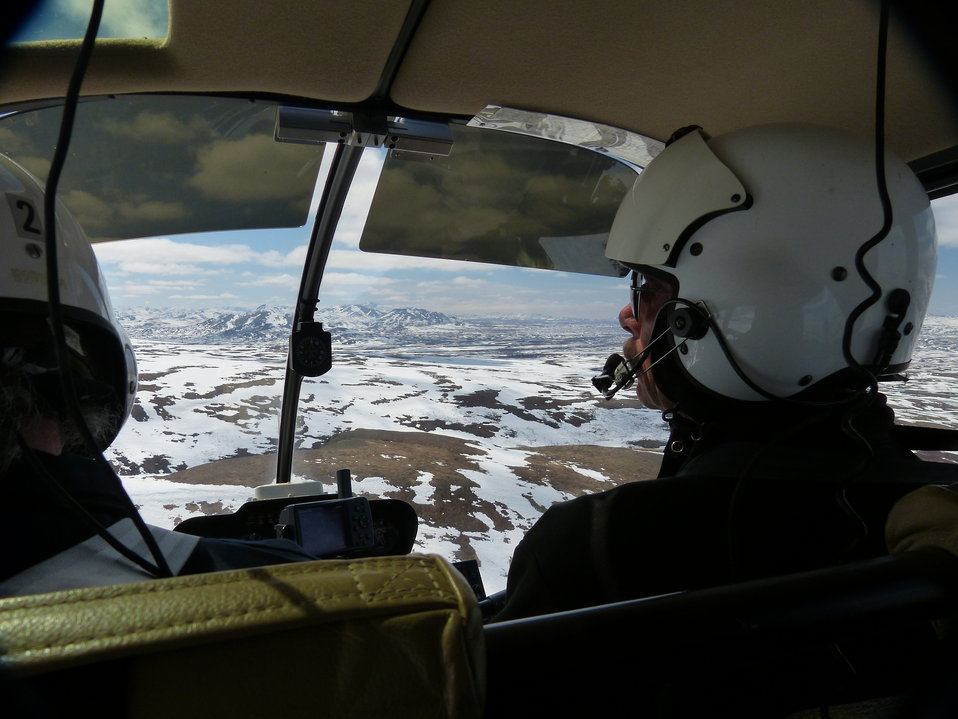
Kilbucks 5-14-2013 KSowl (431)

Cliff-nesting raptor survey, Kilbuck Mountains, Yukon Delta National Wildlife Refuge

Photo credit: Kristine Sowl,
USFWS, YDNWR